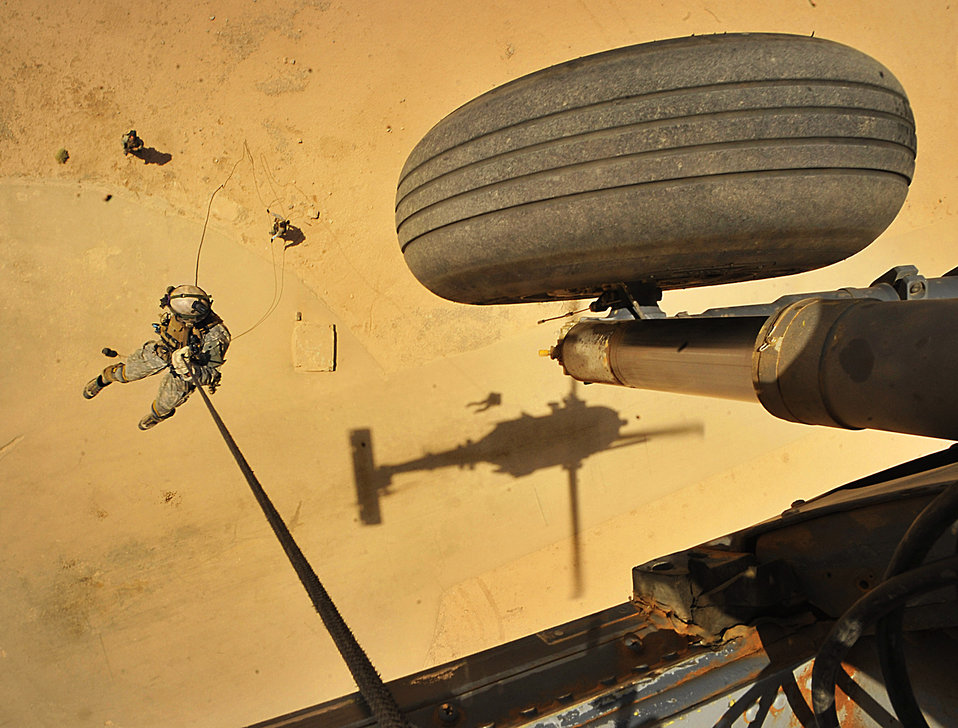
Between a rock and a ...

Pararescueman Senior Airman Corey Farr of the 66th Expeditionary Rescue Squadron rappels from an HH-60G Pave Hawk helicopter Sept. 19 during operational training in Iraq.